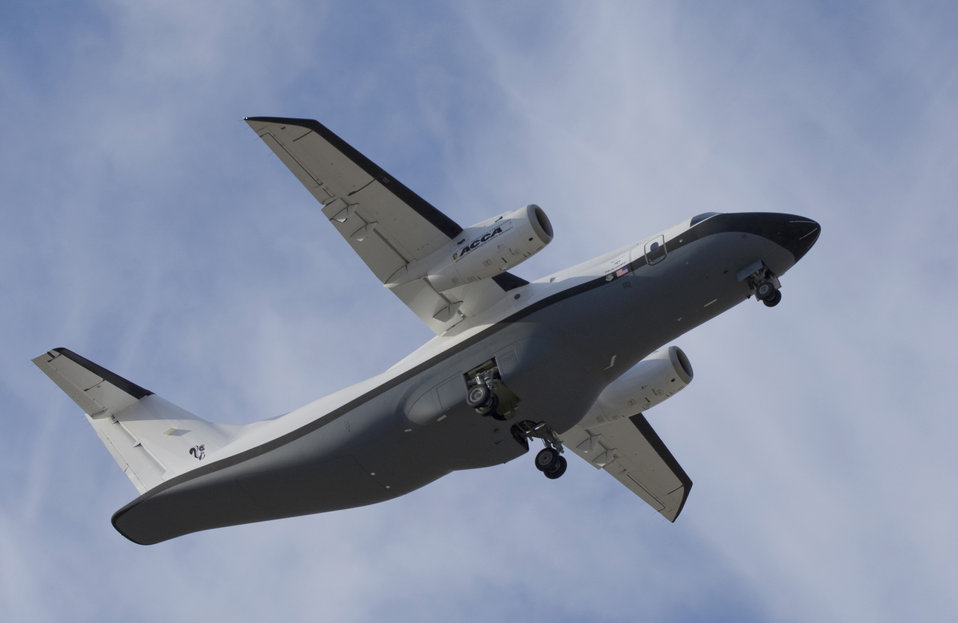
Advanced composite cargo aircraft makes first flight

The Advanced Composite Cargo Aircraft makes its first test flight June 2 from Air Force Plant 42 in Palmdale, Calif. The ACCA is a modified Dornier 328J aircraft. The fuselage aft of the crew station and the vertical tail were removed and replaced with completely new structural designs made of advanced composite materials fabricated using out-of-autoclave curing. It was developed by Air Force Research Laboratory and Lockheed Martin officials.